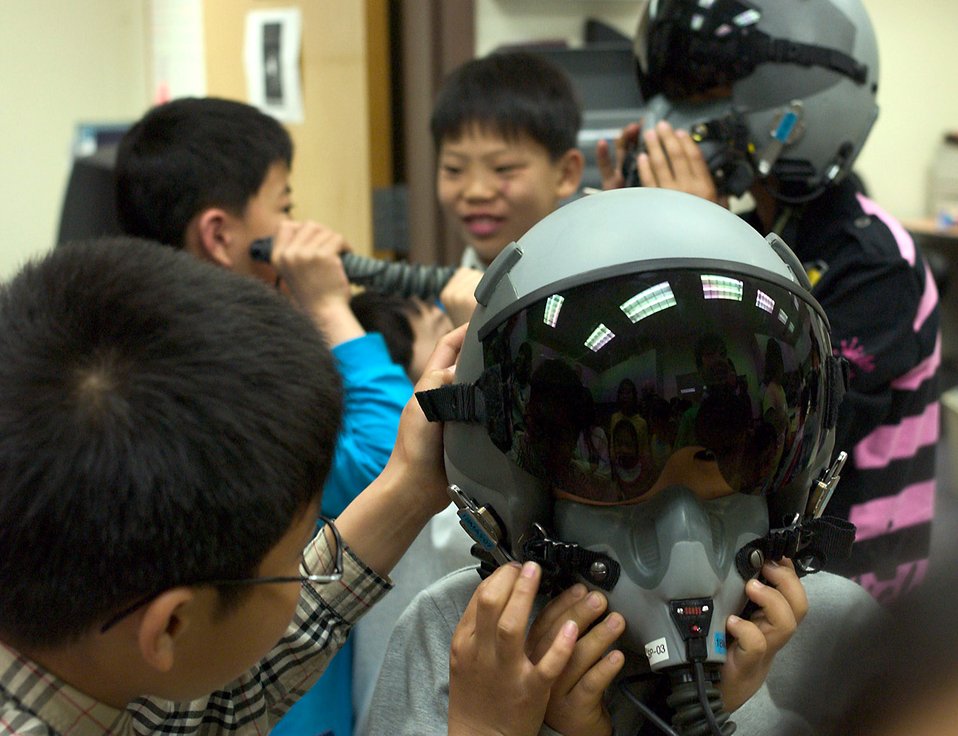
Korean orphans visit Kunsan Airmen

Children from a Gunsan City orphanage toy around with fighter pilot helmets during a visit to the 35th Fighter Squadron April 27 at Kunsan Air Base, South Korea. Airmen of the 35th FS hosted the orphanage as part of the 8th Fighter Wing's Good Neighbor Program and commitment to supporting the community. The 35th FS is one of two F-16 Fighting Falcon squadrons assigned to the 8th Fighter Wing.